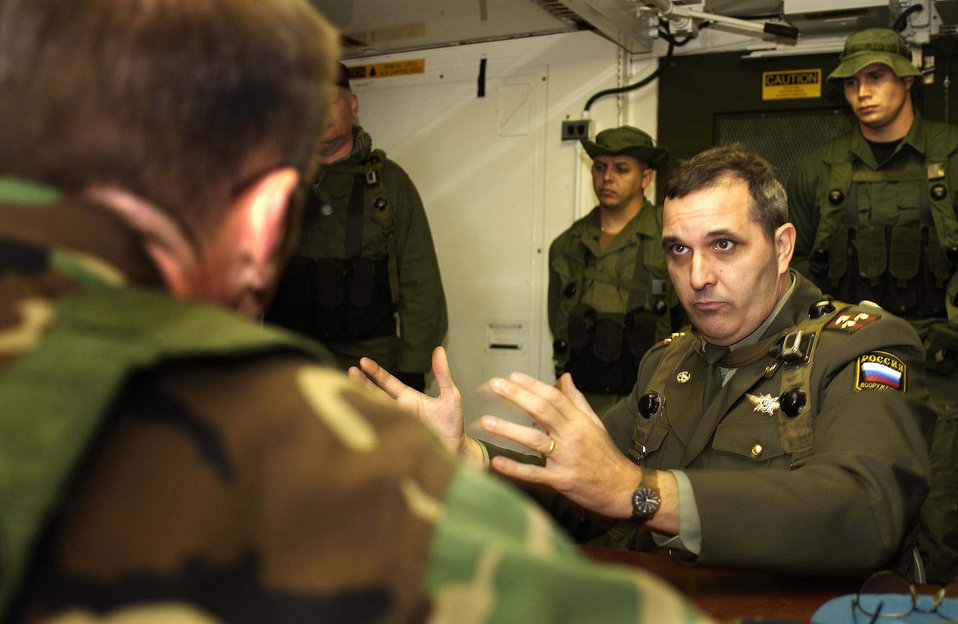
Playing the part

NAVAL AIR ENGINEERING STATION LAKEHURST, N.J. -- The role-playing host-nation commander debates with a base official about the accommodations needed by his troops to complete their mission during the inaugural Eagle Flag on Oct. 15. Eagle Flag is an Air Force-level expeditionary combat-support exercise conducted by the Air Mobility Warfare Center's 421st Training Squadron at Fort Dix, N.J.